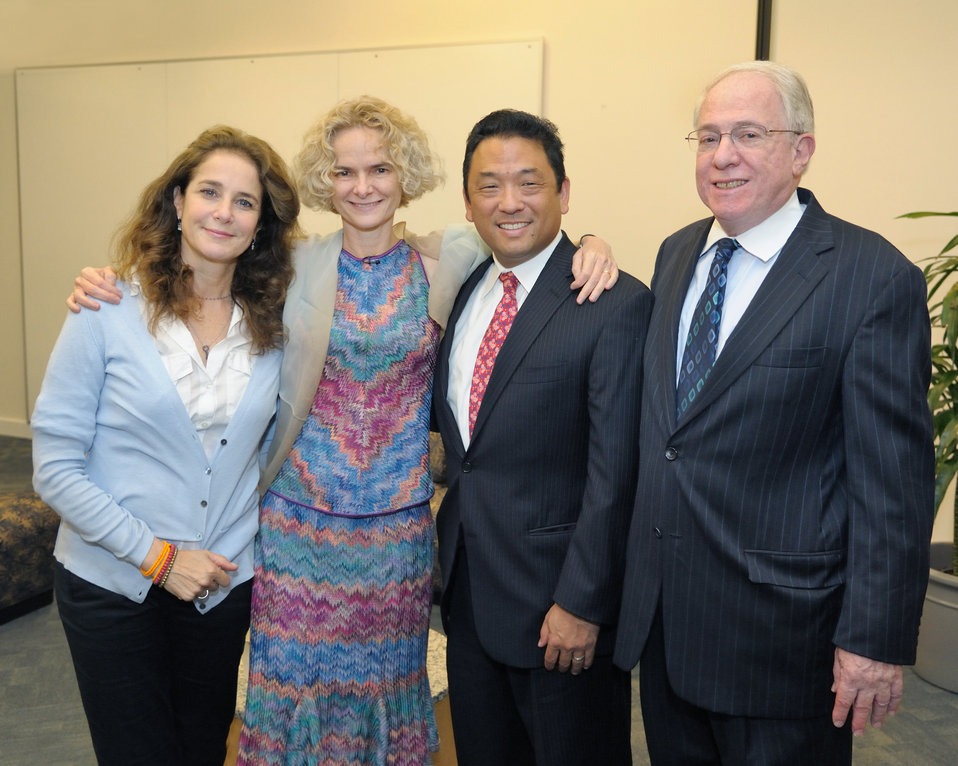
APP4 - NIH Aug 2011

(L-R): Debra Winger, Dr. Nora Volkow (NIDA Director), David Mineta (Deputy Director of Demand Reduction, White House Office of National Drug Control Policy), Dr. Kenneth Warren (Acting Director, NIAAA)